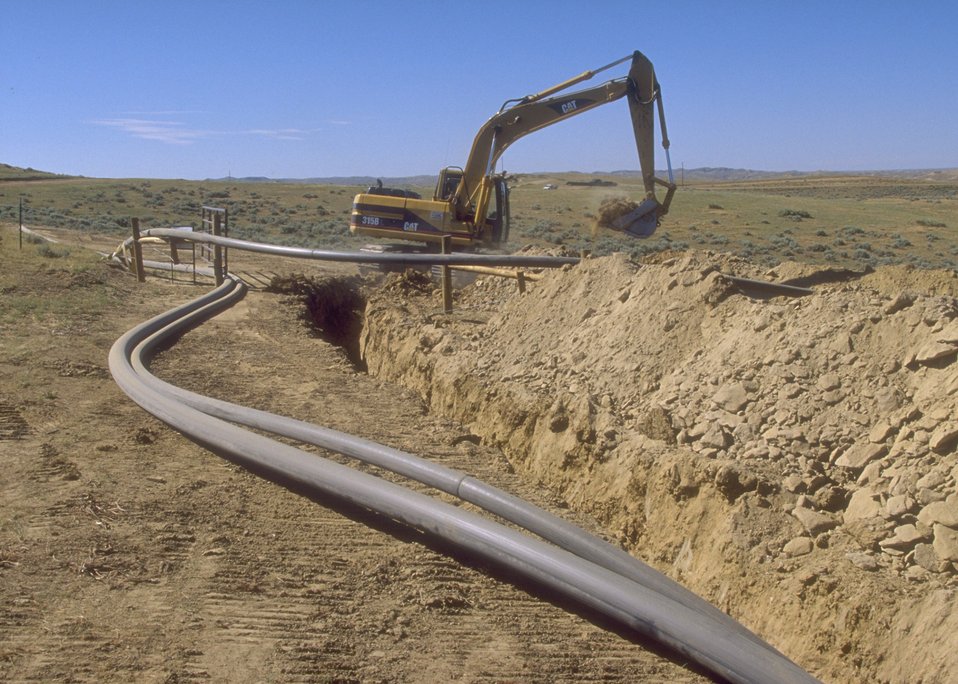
Construction for coal bed methane development, Buffalo Field Office.